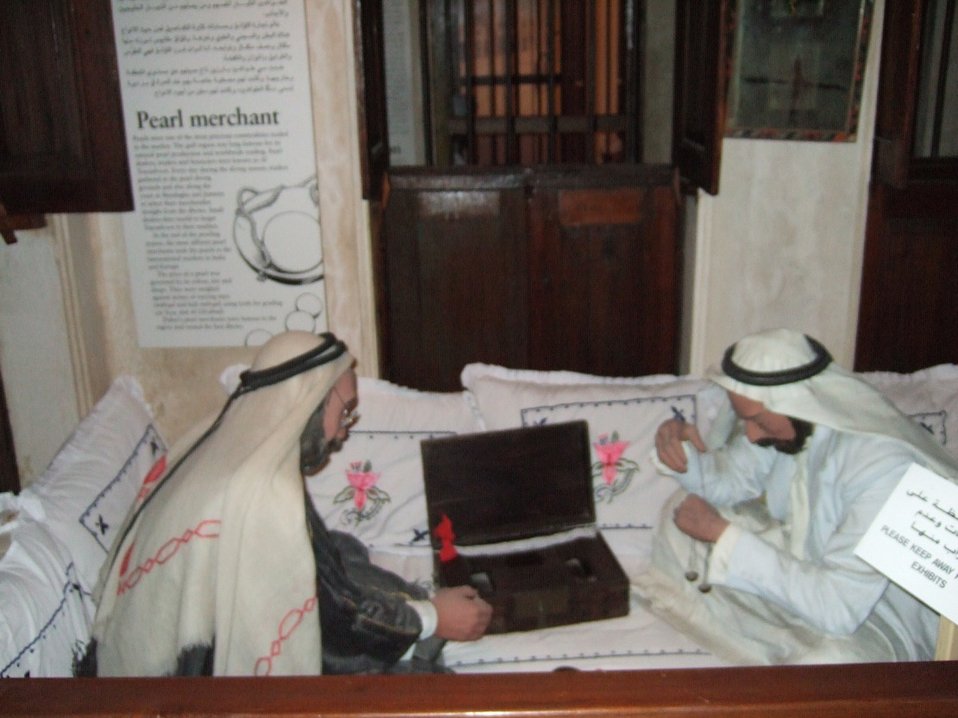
'pearl merchant' mannequins at the Dubai Museum (2006)